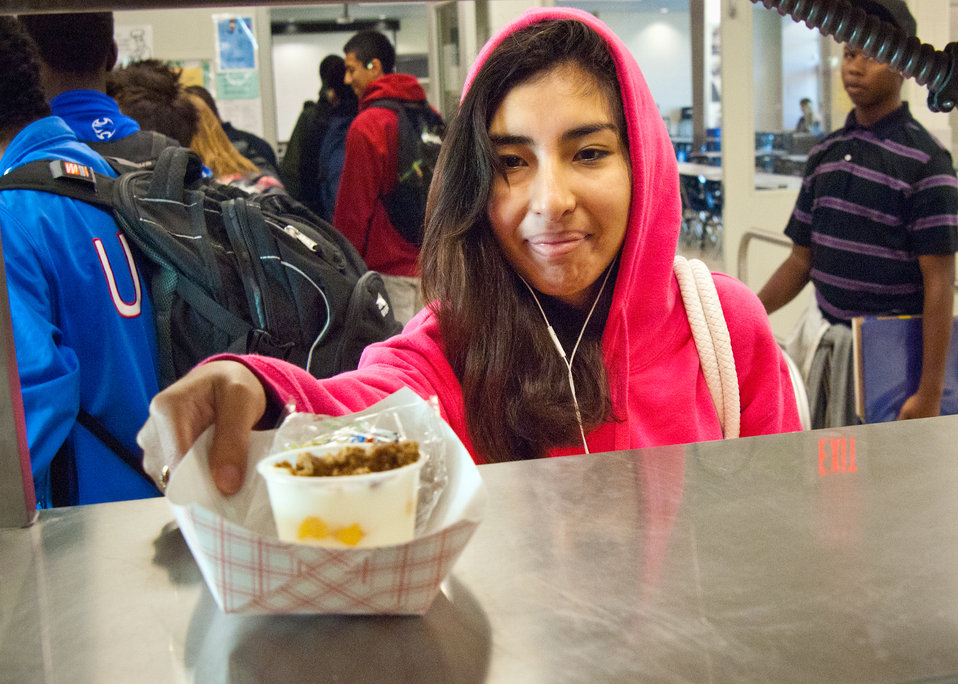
20111025-FNS-RBN-School Lunch

Students at Washington-Lee High School, in Arlington, VA, select a parfait of yogurt, fruit and granola along with a blueberry muffin for breakfast on Wednesday, October 25, 2011. The school breakfast and lunch are prepared by Arlington Public Schools, Food and Nutrition Services. The National School Lunch Program is a federally assisted meal program administered by the United States Department of Agriculture, Food and Nutrition Service operating in public, nonprofit private schools and residential child care institutions. It provides nutritionally balanced, low-cost or free lunches to children each school day.